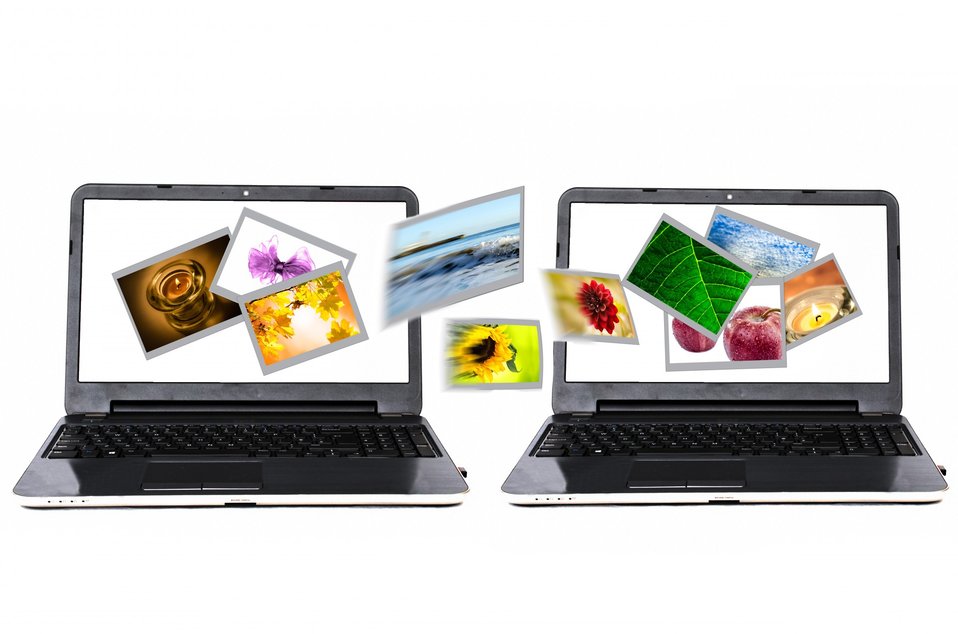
Internet

Two laptops are sharing photos by air.